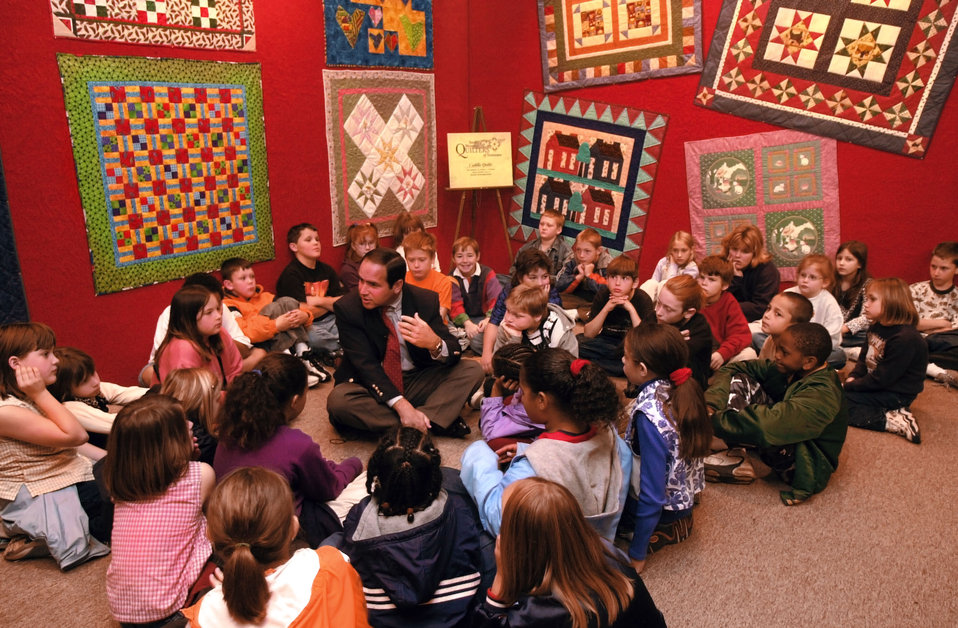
Congressman Wamp talking to childern about 911

01-260-3503 photo by Lynn Freeny

The American Museum of Science and Energy Oak Ridge Tennessee 10-19-2001